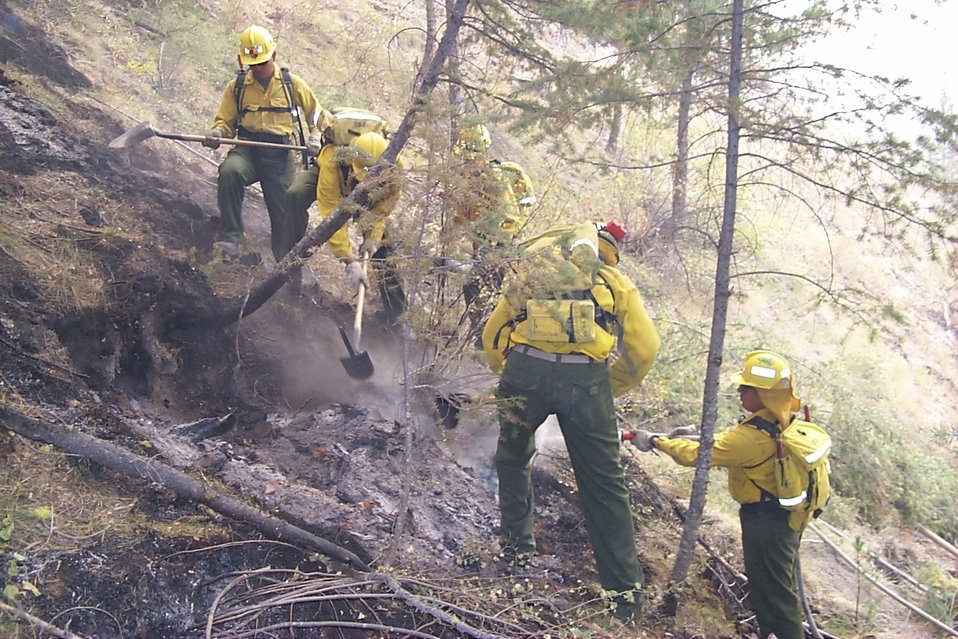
Line crew Fire Clearwater Fire Salmon Field Office USRD Upper Snake River District